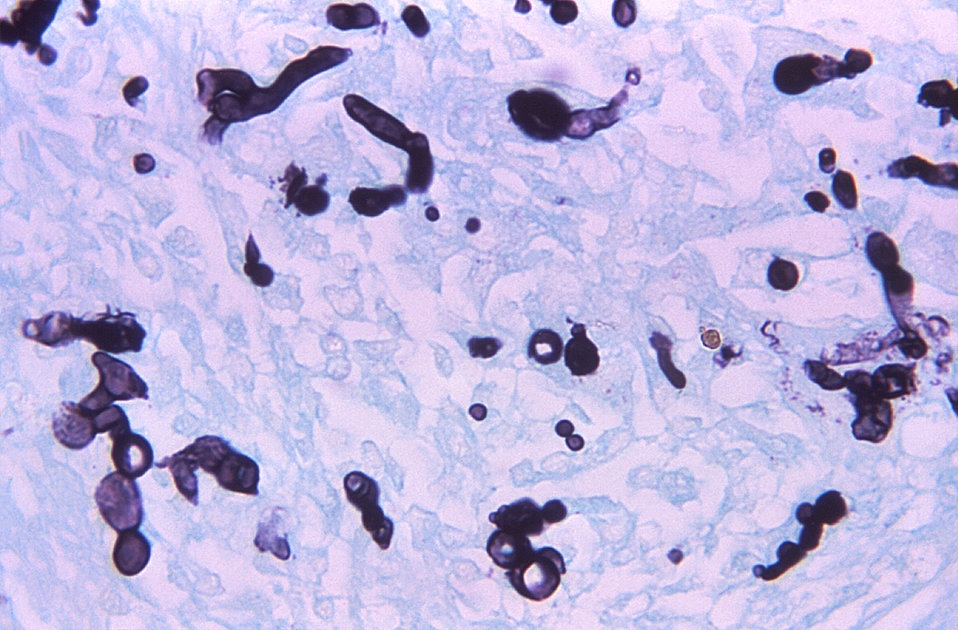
Magnified 500X, this Gamori-stained photomicrograph of a canine liver tissue specimen, revealed the presence of budding Blastomyces dermatitidis fungal cells of various sizes. Note the accompanying filaments, or mycelium.What is blastomycosis?